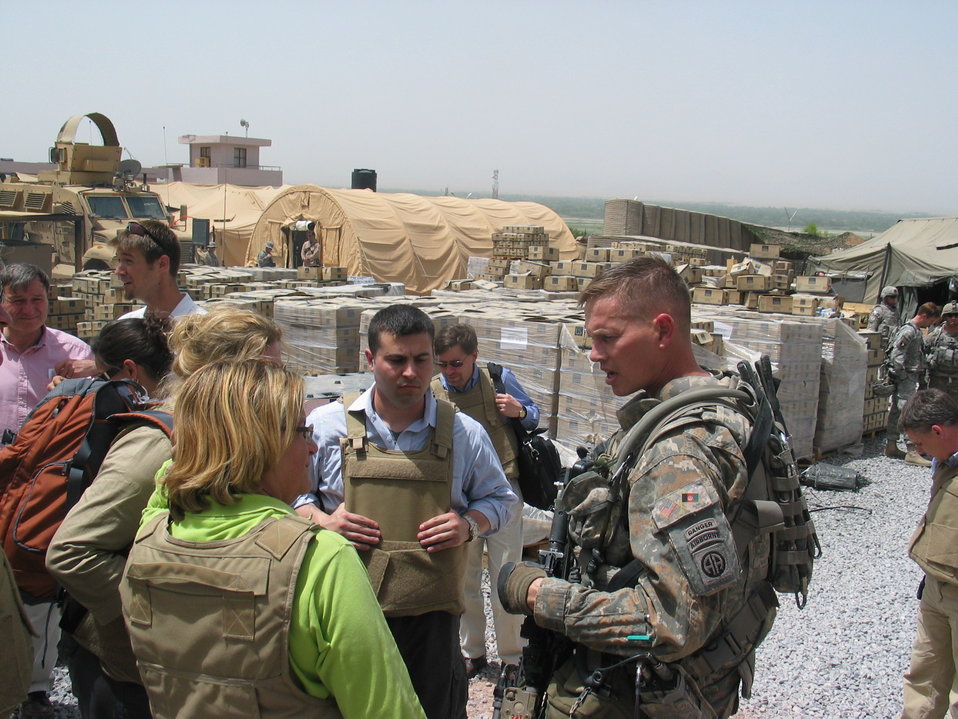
CODEL Berman